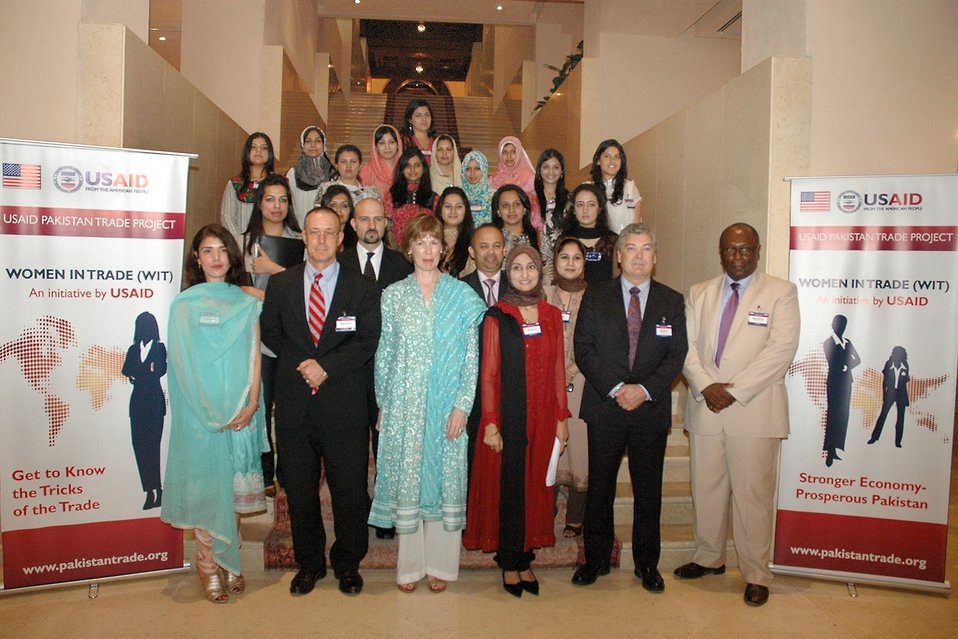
Dr. Wyatt, and representatives of USAID, with participants of the Women in Trade Initiative.

Under this initiative, USAID has arranged three-month internships for 17 female university graduates with well-known companies such as TARGET Sourcing Services Pakistan, TEXLYNX, NISHAT Group, and Li & Fung Pakistan. These women will gain skills in sourcing and marketing of products, product development and diversification, and supply chain management.